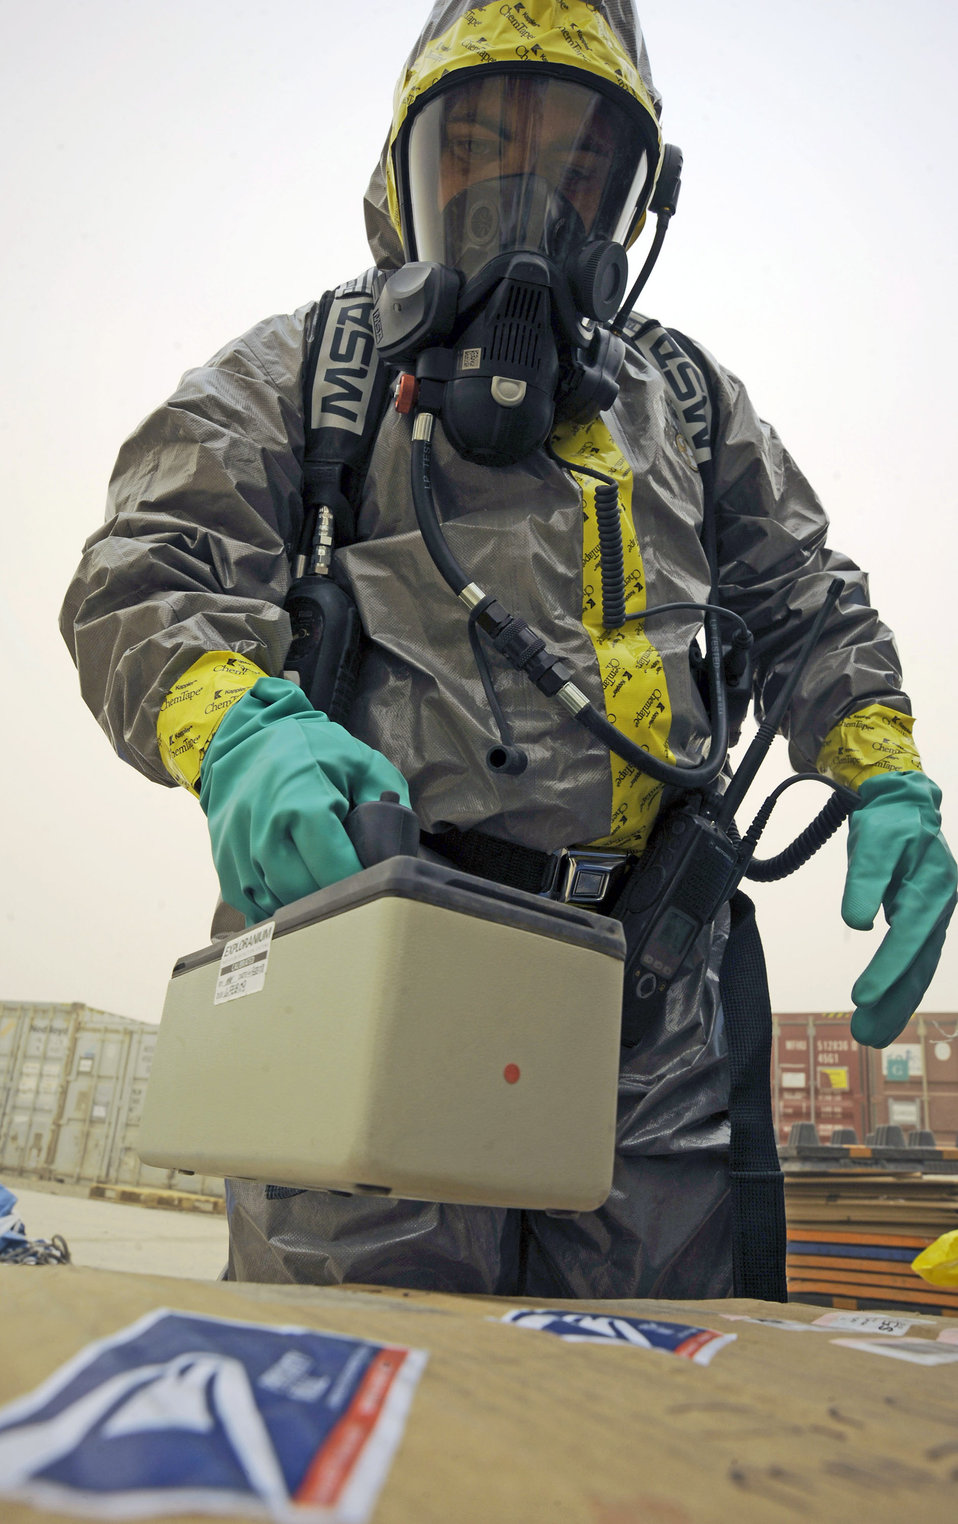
Inspecting the mail

Senior Airman Tyrone Fisher runs a test to ensure mail has not been contaminated with hazardous materials recently at Camp Stryker, Iraq. All mail that is improperly labeled, doesn't have a return address or gets lost in the system has to be inspected before it can be processed. The Iraqi government returns the mail to the Joint Military Mail Terminal, but necessary precautions are taken because the mail left the military postal system. Airman Fisher is deployed from the Indiana Air National Guard's 181st Intelligence Wing. He is with the emergency management flight of the 447th Expeditionary Civil Engineer Squadron.